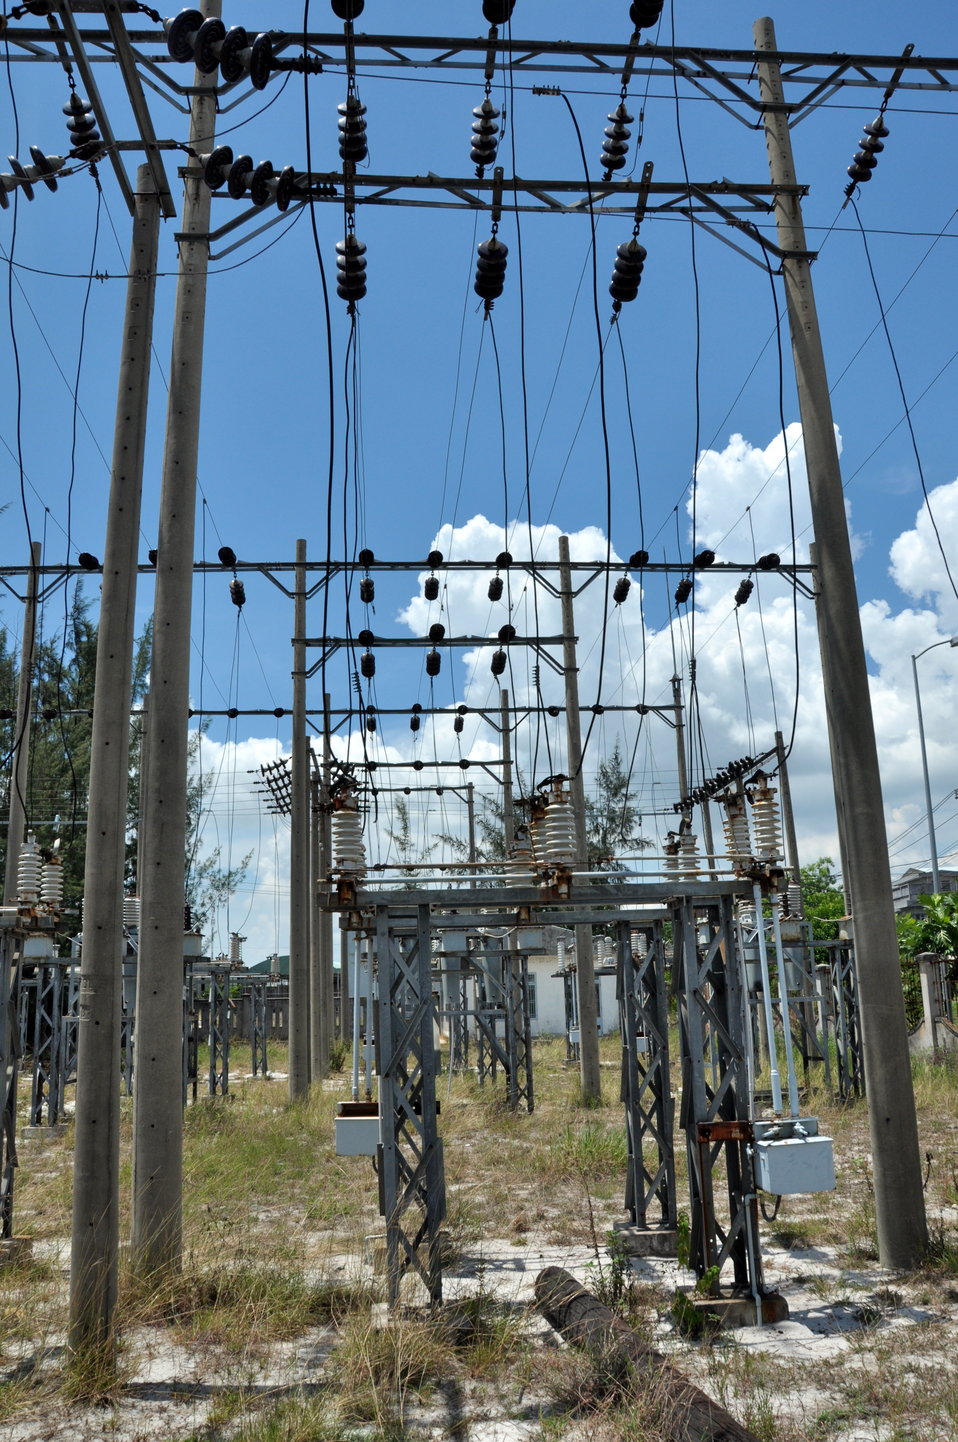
USAID Mission Director visits Danang University of Technology

Danang, July 1Danang, July 17, 2013
Photo: Richard Nyberg, USAID
7, 2013